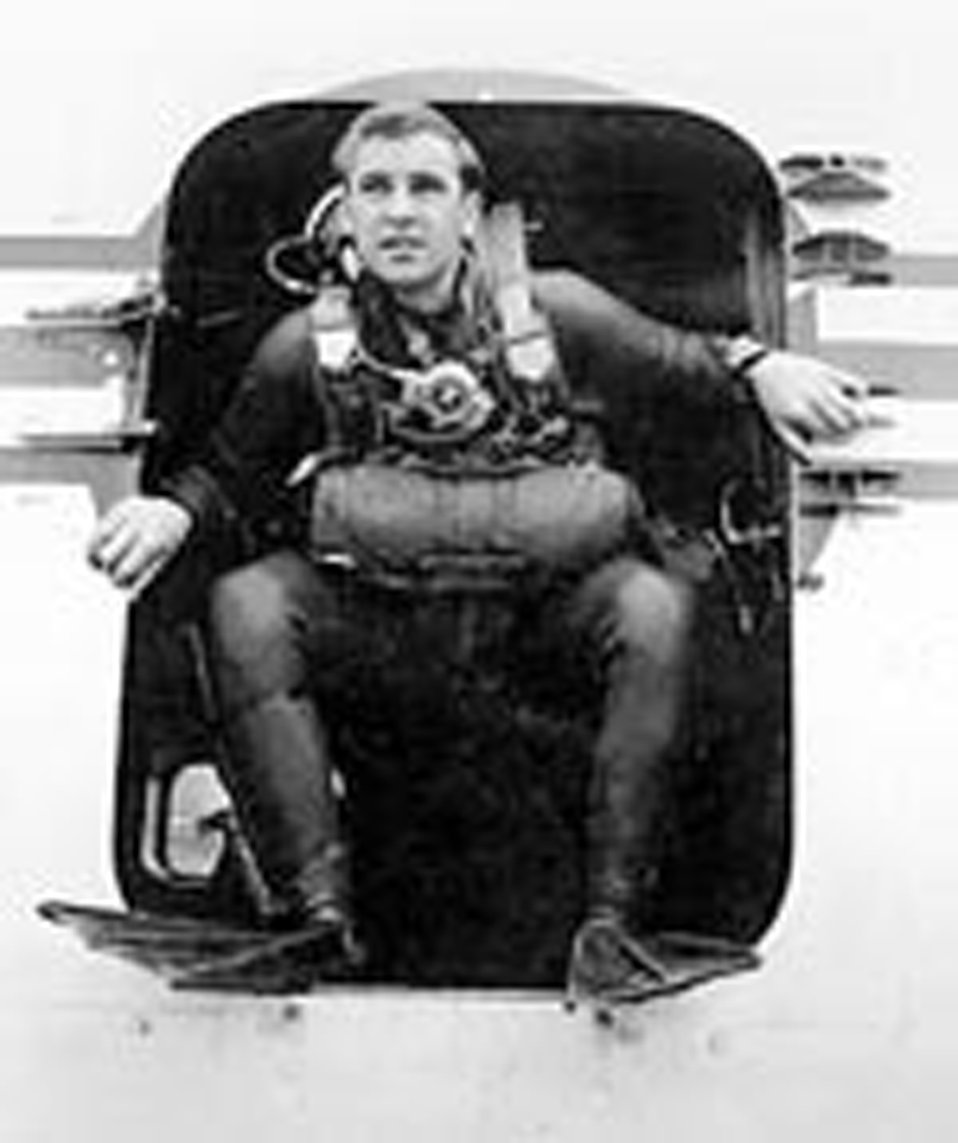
Medal of Honor

1960's -- Staff Sgt. William Pitsenbarger received the Medal of Honor posthumously for actions in the Vietnam War.